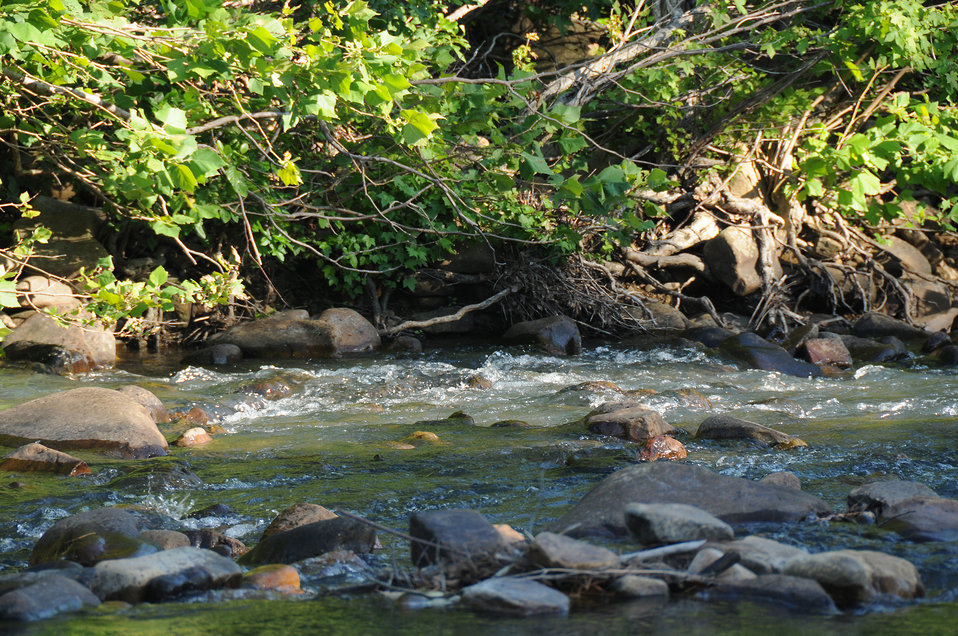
A river runs through the Ouachita National Forest in McCurtain County, Oklahoma on August 11, 2009.